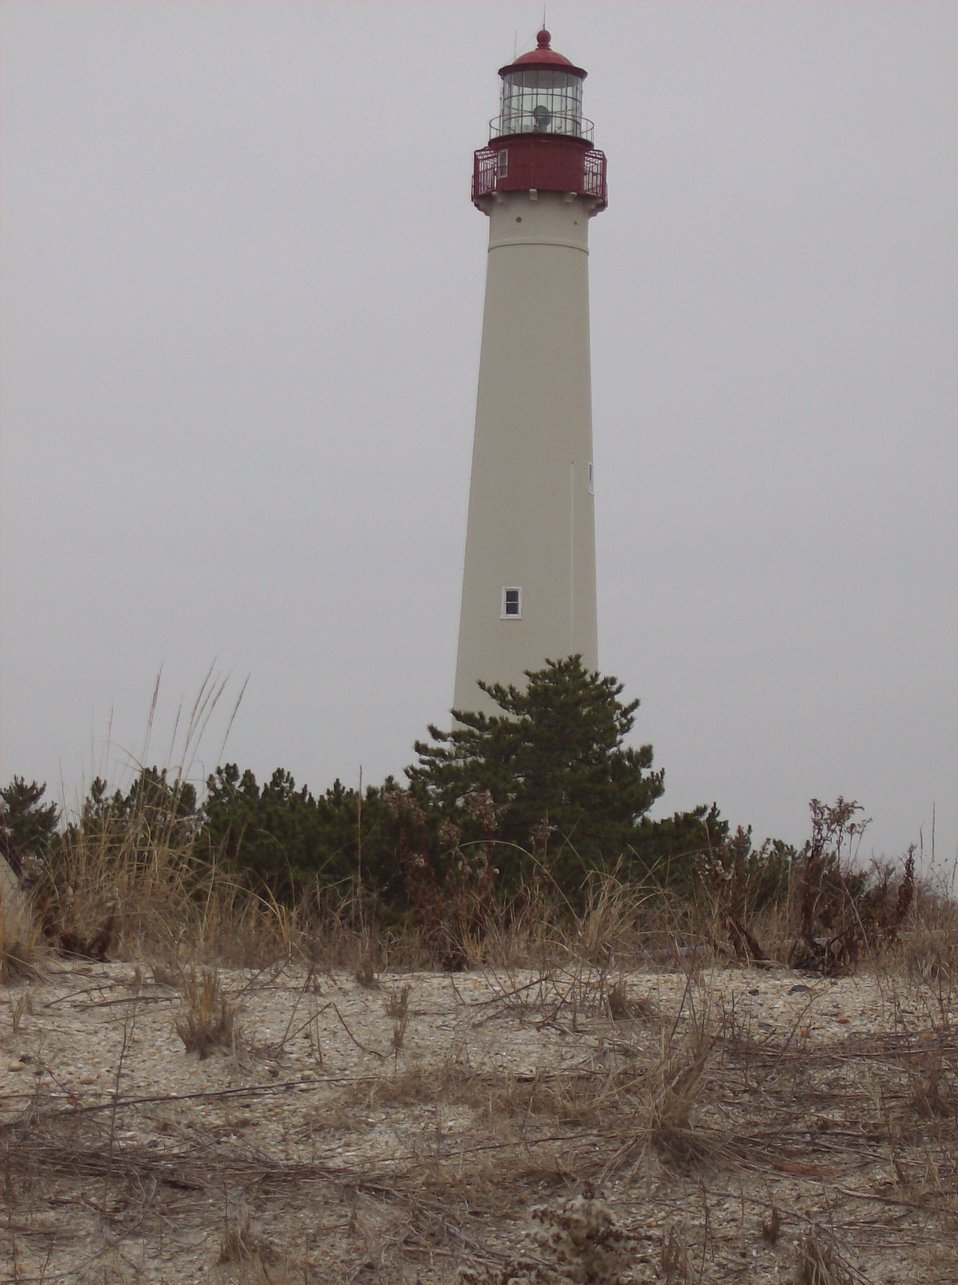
The Cape May Lighthouse standing as a sentinel for Delaware Bay entrance.